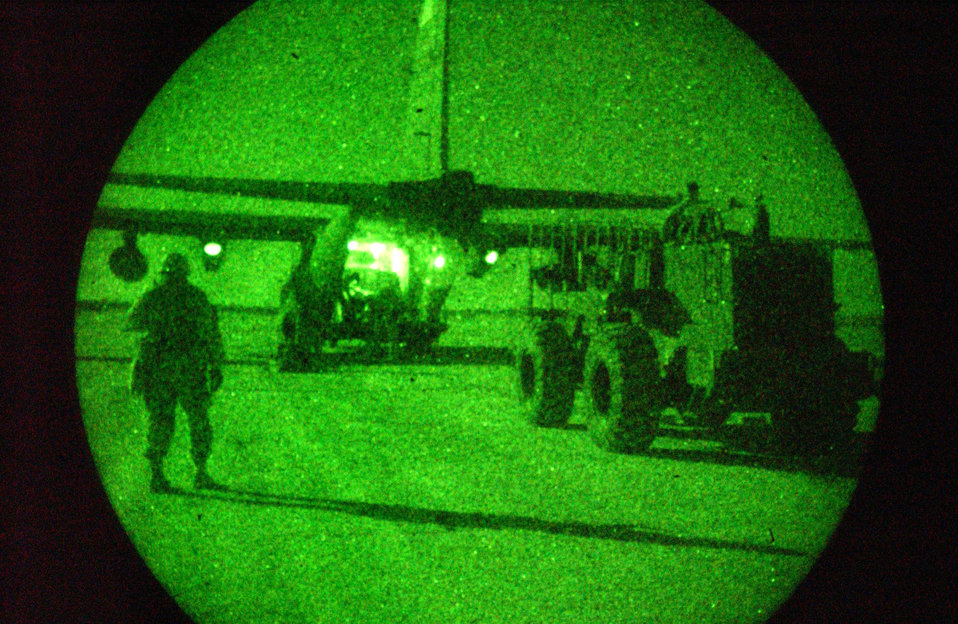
Help is here

OPERATION IRAQI FREEDOM -- Members of a U.S. Air Force Mission Support Team from the 621st Air Mobility Group, McGuire Air Force Base, N.J., offload the first humanitarian assistance pallet from a C-130 Hercules at Baghdad International Airport on April 12, in support of Operation Iraqi Freedom.